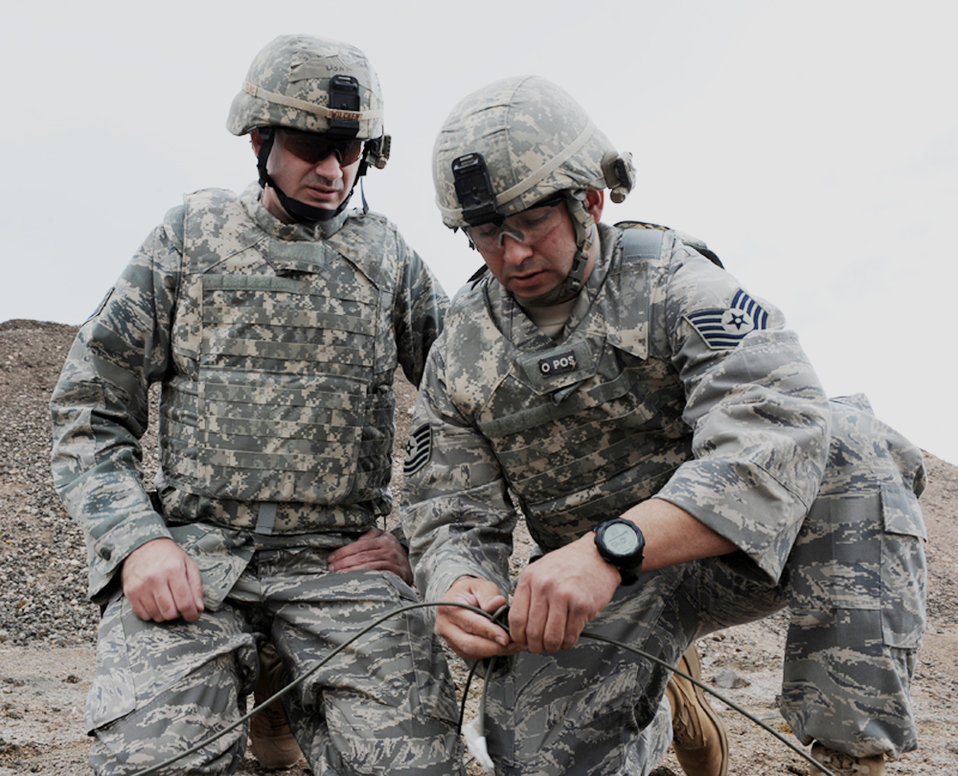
EOD team charge an explosion

Staff Sgt. Darryl Wilcken (left) observes as Tech. Sgt. Jayson Wells ties a knot branched from the main line which will set off a shaped charge March 30, 2010, at Ellsworth Air Force Base, S.D. Sergeants Wilcken and Wells are explosive ordnance disposal journeymen with the 28th Civil Engineer Squadron.